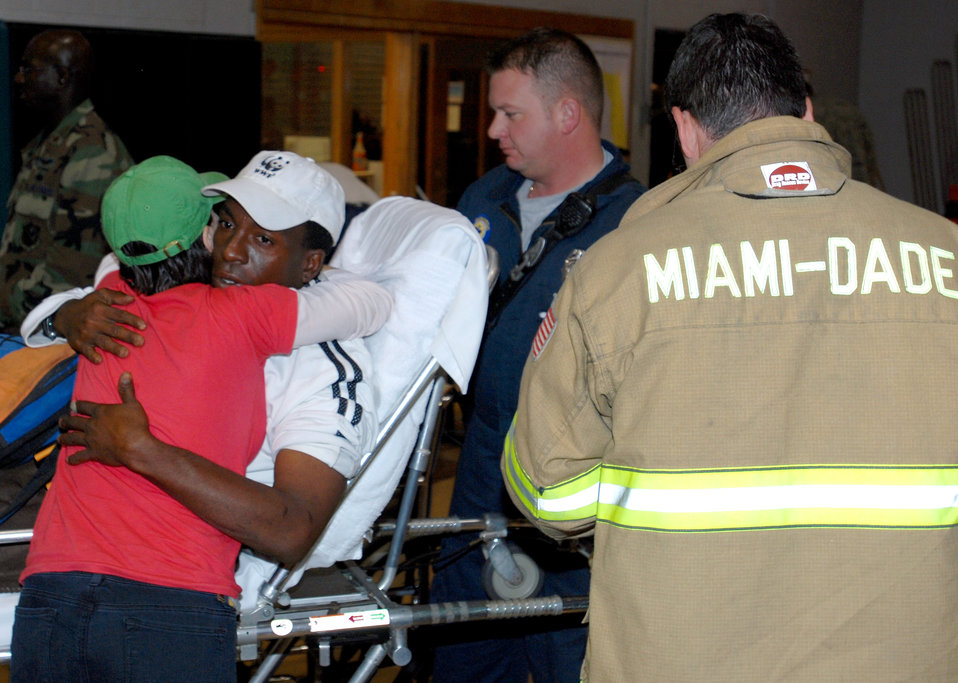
Operation Unified Response

Rachel Florio, a Connecticut native, hugs a Haitian, Jan. 20, 2010, at Homestead Air Reserve Base, Fla., before firefighters from the Miami-Dade Fire Department take him to a local hospital. The Haitian broke his ankle when he jumped off the roof of a two-story building during the earthquake that devastated the island nation Jan. 12.